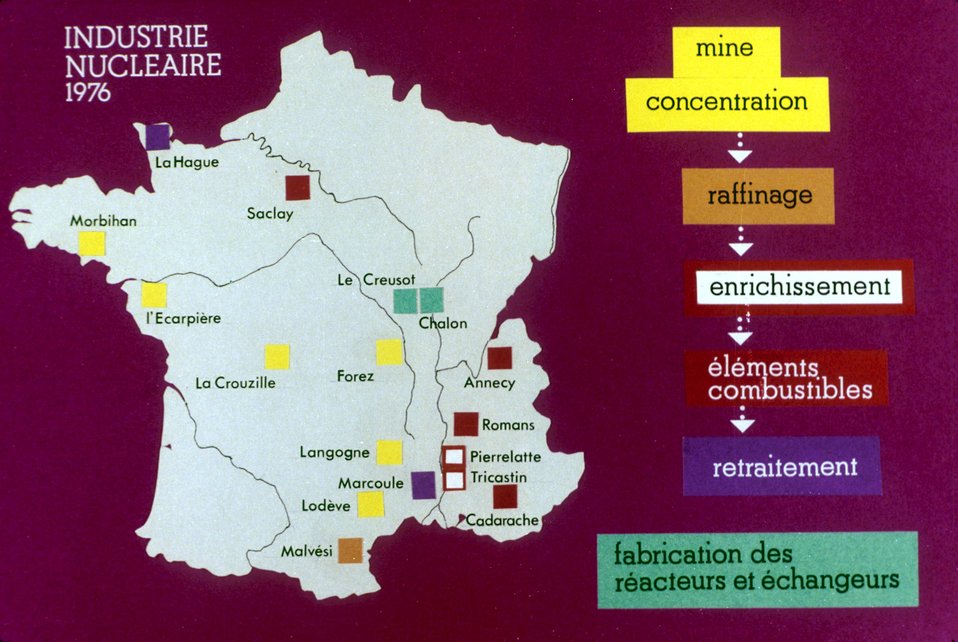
Carte de France de l'industrie nuclÐaire.